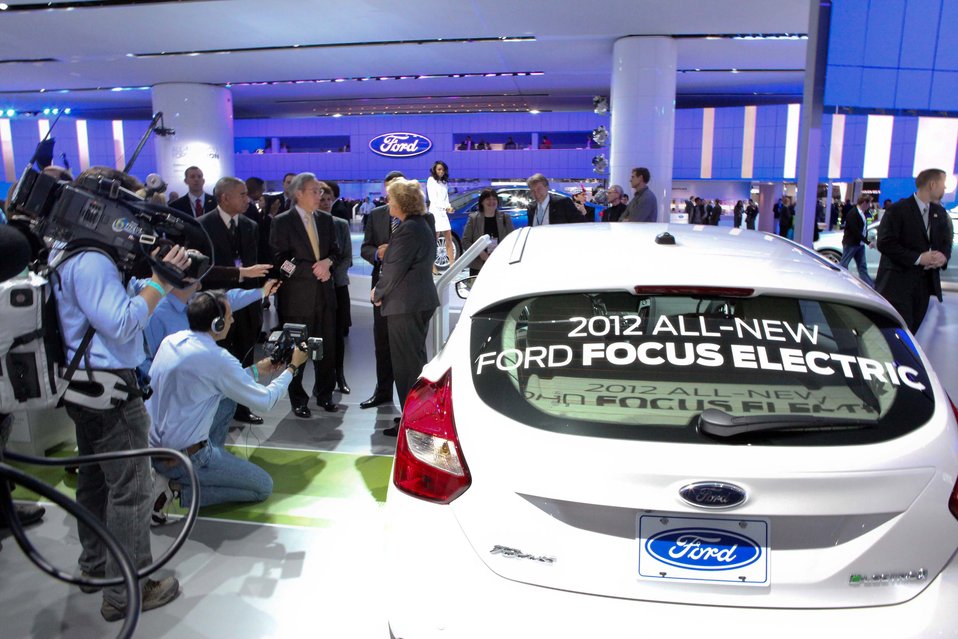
Sue Cischke (Ford Group Vice President) is telling Secretary Chu about the 2012 Ford Focus electric.